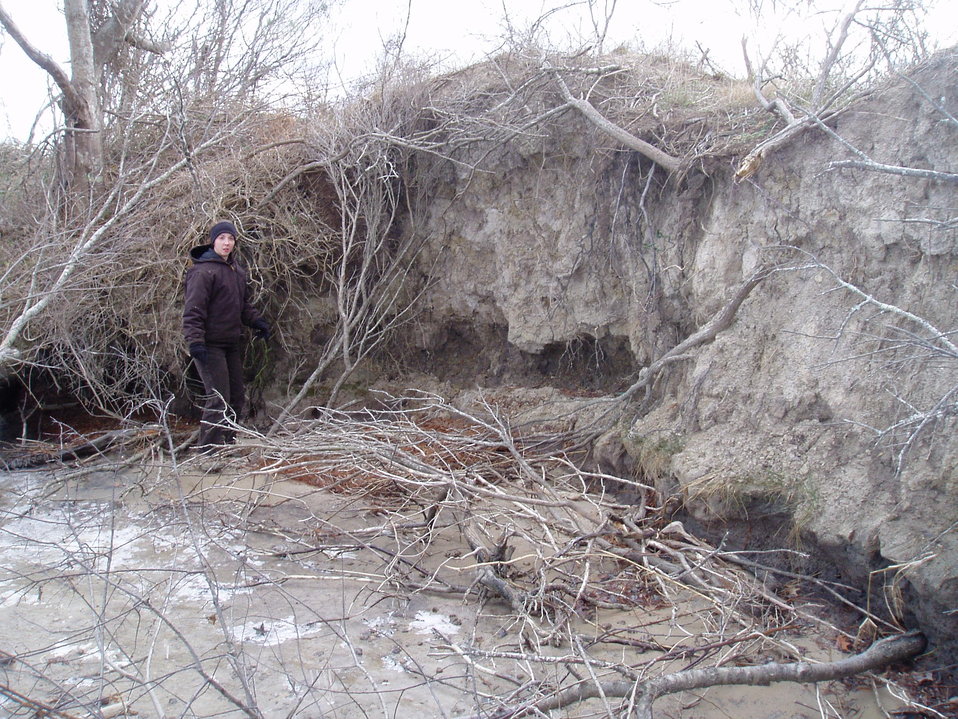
Erosion along the berm at Lake Tecumseh that has almost breached.